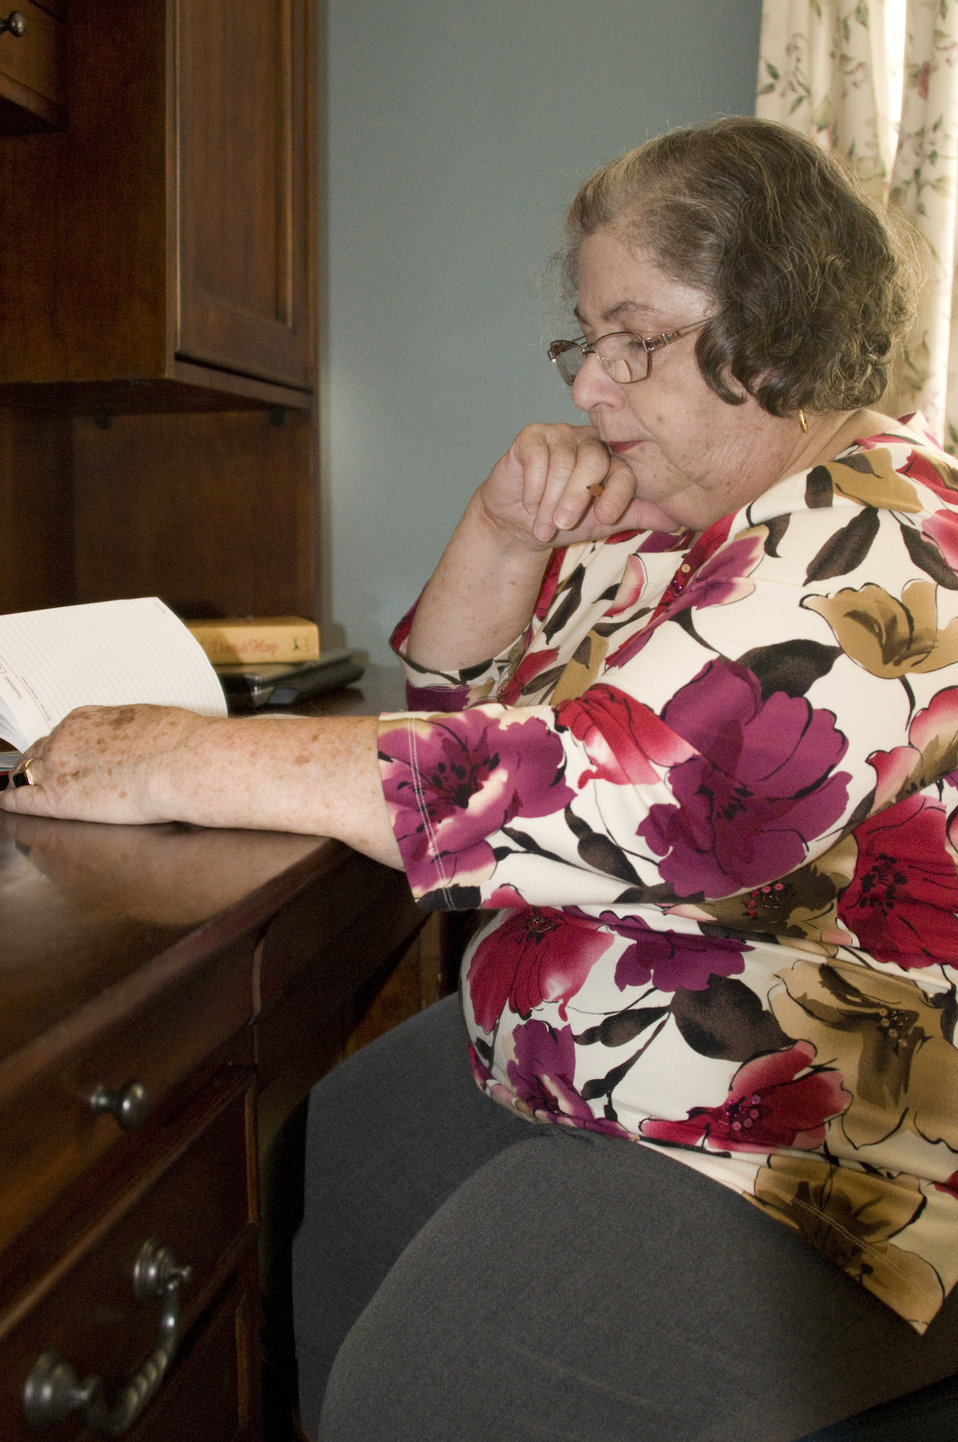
Seated at her in-home desk after having picked up her mail from her street side mailbox, this woman, who is a rheumatoid arthritis patient, was making notations in what appeared to be a daily diary. Living with arthritis does not necessarily mean existing in a non-functional state, and keeping a record of your daily progress, helps not only the patient, but her physician track any progress, as well as any regression in her condition.